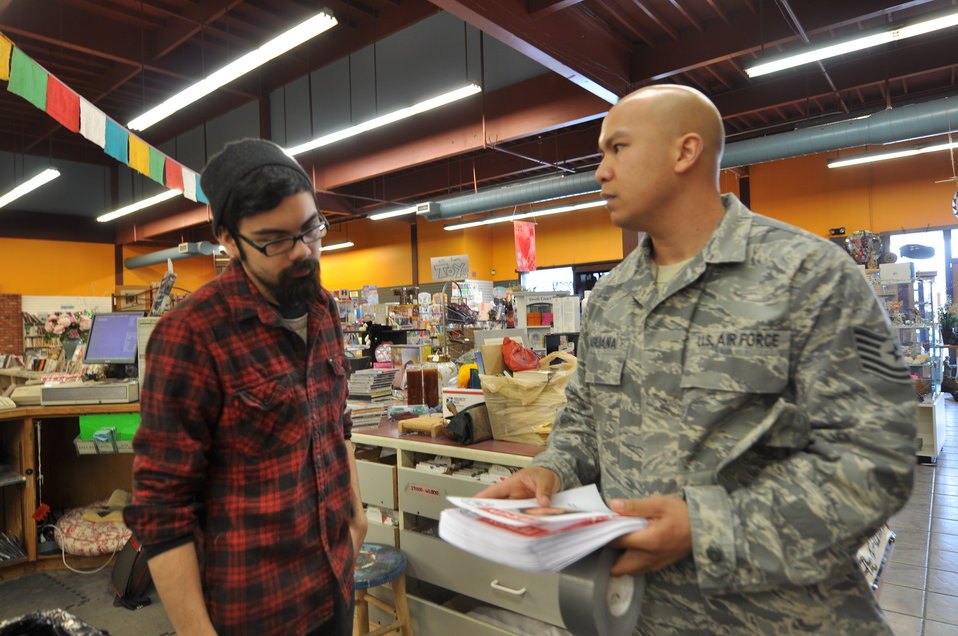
Finding Reeves

Tech. Sgt. Benjamin Laguana, 673d Logistics Readiness Squadron posted fliers in downtown Anchorage May 4 in search of Senior Airman Clinton Reeves. Reeves has been missing since April 23. He was the victim of a homocide and his body was identified May 9, 2012.